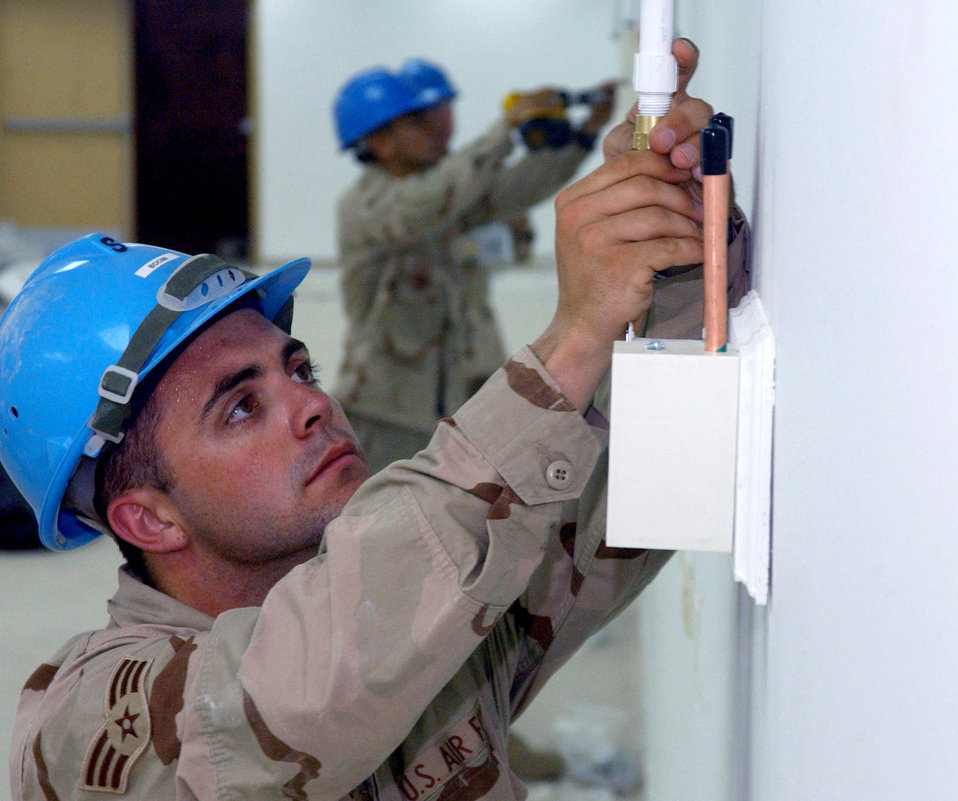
Operation Iraqi Freedom

Senior Airman Scott Hatch connects a vacuum line from the main system to the vacuum outlet box on the wall of the ward in the new Air Force Theater Hospital being built at Balad Air Base, Iraq. The new hospital is replacing the old tent structure. Airman Hatch is deployed from the 81st Medical Support Squadron at at Keesler Air Force Base, Miss.